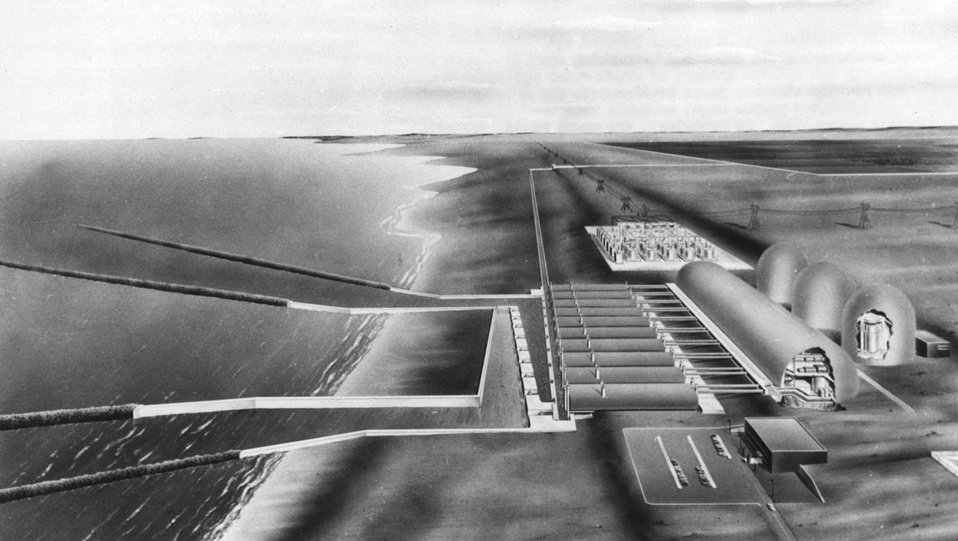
c. 1964